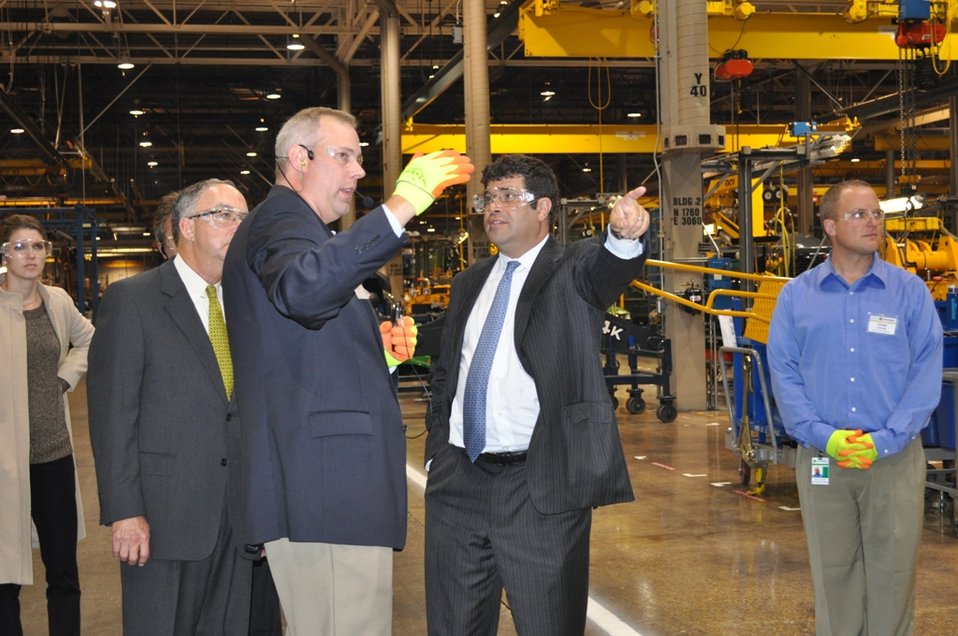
Deputy Secretary Neal Wolin visits Deere and Co.

Deputy Secretary Neal Wolin on a tour lead by a worker at the John Deere Davenport Works Construction and Forestry Facility. While in Moline, Deputy Secretary Wolin emphasized the importance of generating skilled manufacturing jobs in the United States and how the American Jobs Act’s investments in infrastructure will help create jobs and grow our domestic manufacturing sector.